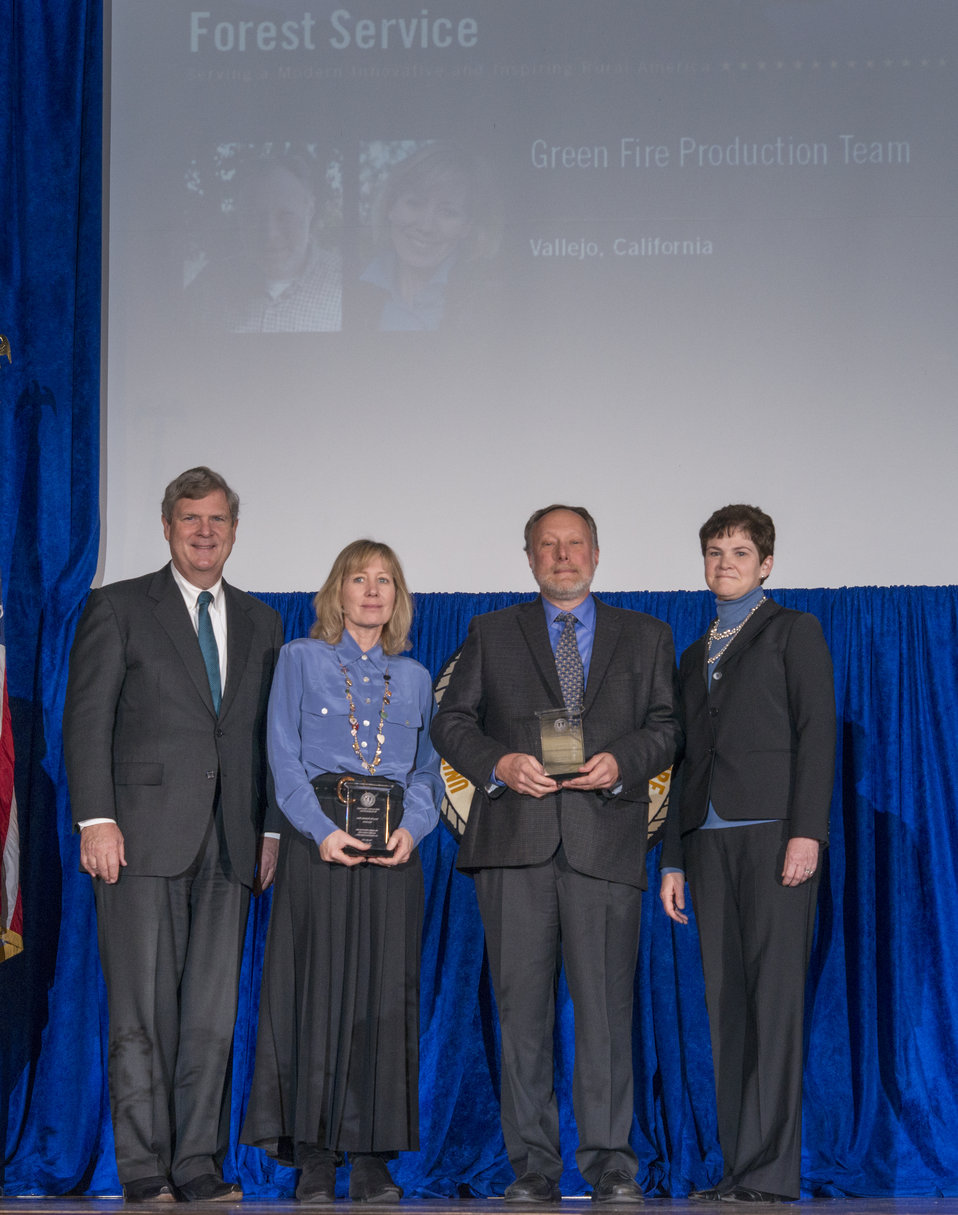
Agriculture Secretary Tom Vilsack and Agriculture Deputy Secretary Krysta Harden present the Secretary’s Honor Award to the Green Fire Production Team, Forest Service in Vallejo, CA Group leaders Ann Dunsky and Steven Dunsky for producing the award-winning documentary Green Fire which continues to share the Forest Service land ethic with millions of viewers around the world at the 2013 Secretary's Honor Awards in the Jefferson Auditorium at the U.S. Department of Agriculture (USDA) in Washington, D.C. on Wednesday, Dec. 11, 2013.